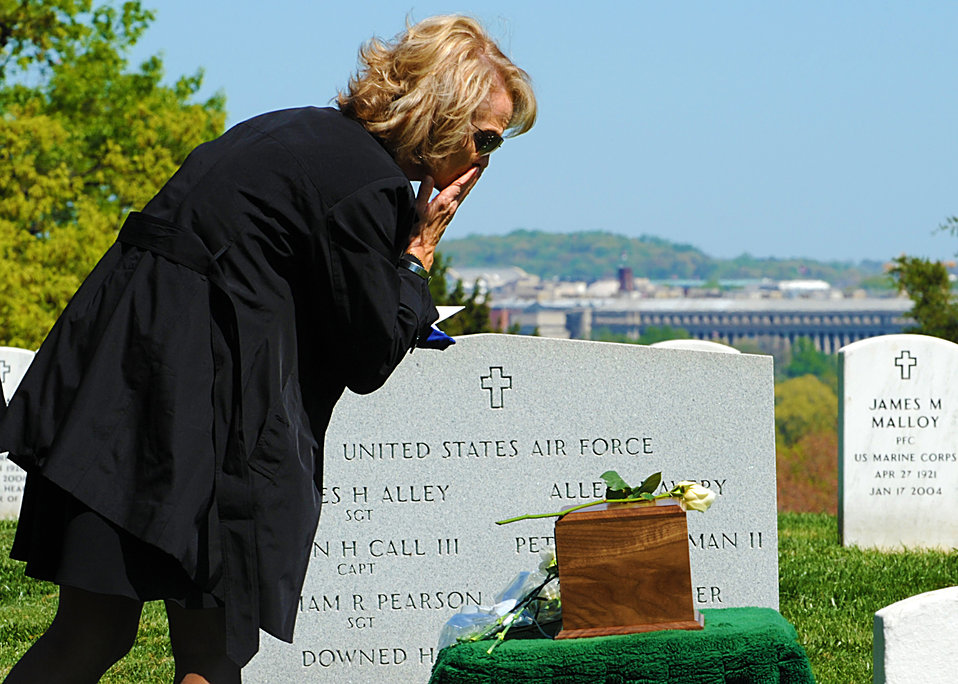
Tech. Sgt. Allen Avery internment

Debbie McBride blows one last kiss to her father, Tech. Sgt. Allen Avery during his burial April 6, 2012, at Arlington National Cemetery in Arlington, Va. Avery was a pararescueman who, along with five others, was killed during a recovery operation in Vietnam on April 6, 1972. Avery's remains were recently identified via new DNA techniques and returned to the U.S. He was laid to rest with full military honors along with his fellow crew members who were interred in 1997.